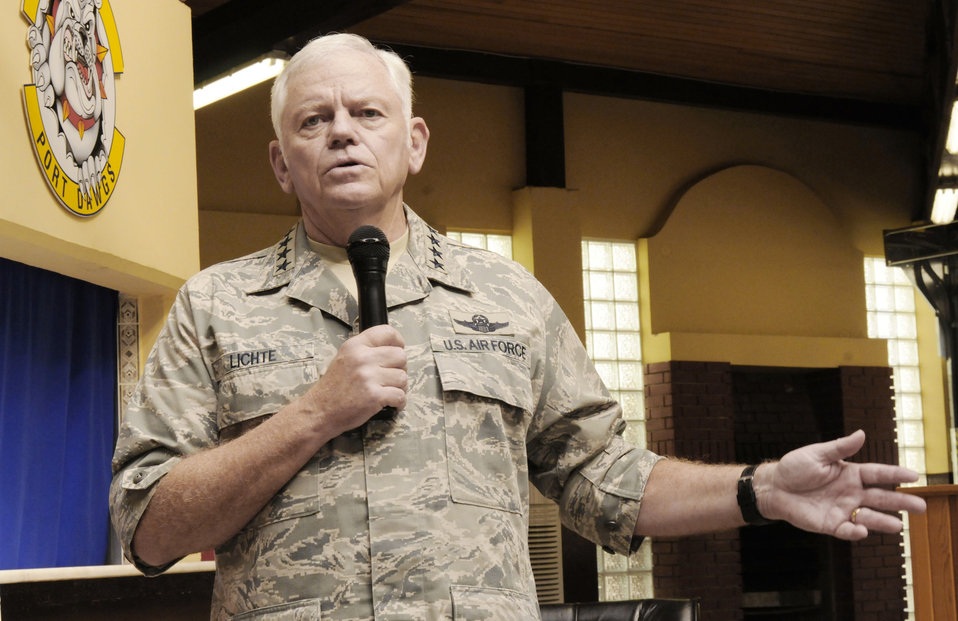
Mobility commander addresses Incirlik Airmen

Gen. Arthur J. Licht addresses Airmen during a series of town hall meetings Oct. 5, 2009, at Incirlik Air Base, Turkey. General Lichte is the commander of Air Mobility Command.